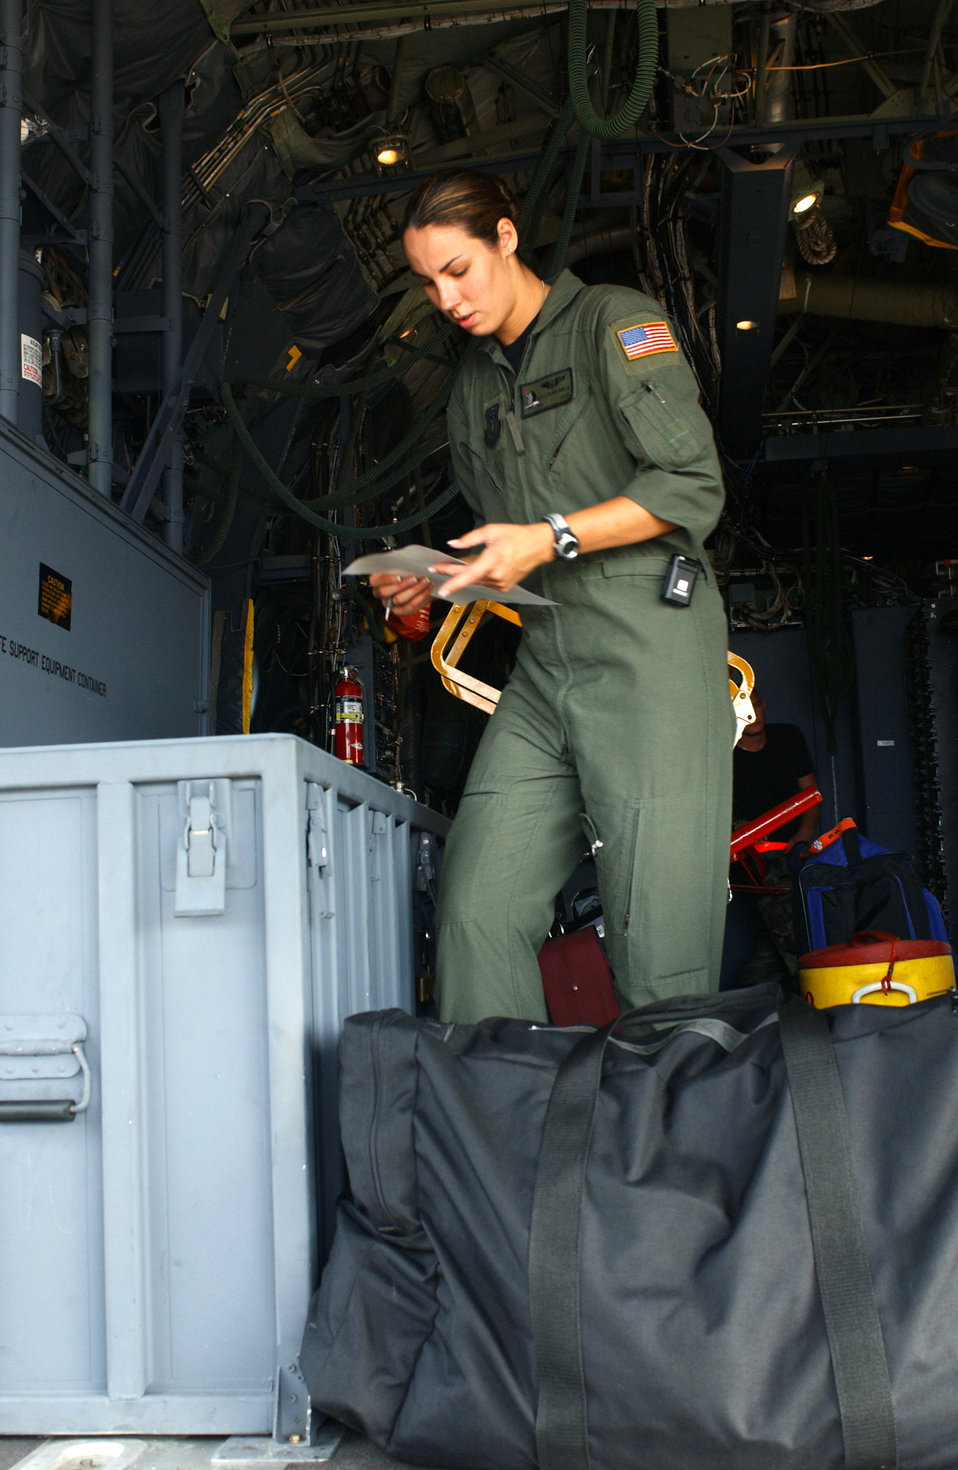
Bases, aircraft prepare for Hurricane Ivan

HURLBURT FIELD, Fla. -- Senior Airman Carolyn Brumble finishes loading an AC-130U gunship Sept. 13 before evacuating to avoid Hurricane Ivan. Airman Brumble is assigned to the 4th Special Operations Squadron.